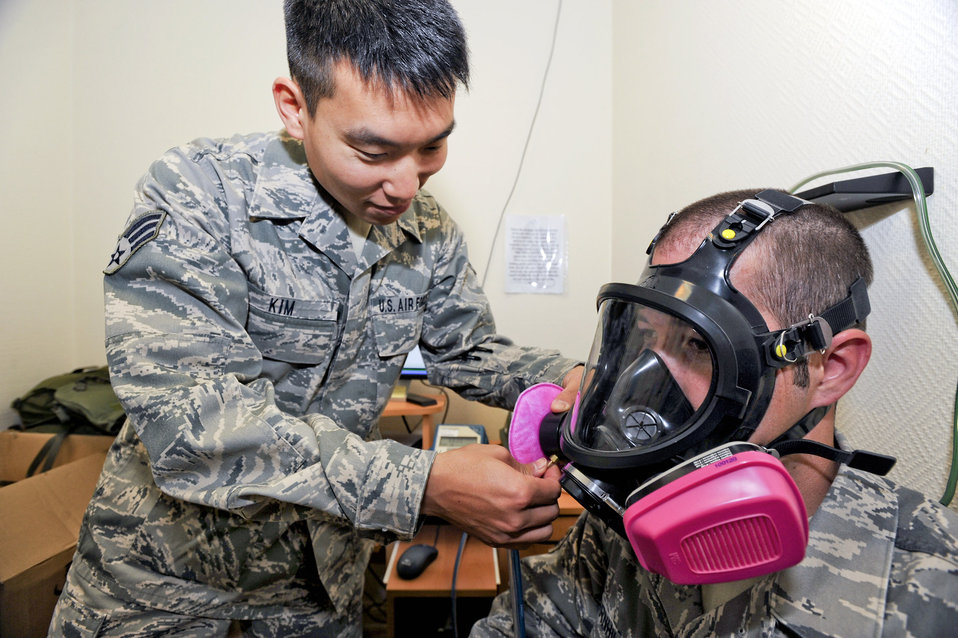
Busy BEEs keep base buzzing

Senior Airman Andrew Kim tightens Senior Airman Jonathan Barnhill's respirator mask before a fit test April 7 at an air base in Southwest Asia. Respirators must be periodically tested to ensure they provide adequate protection. Airman Kim is a bioenvironmental engineering technician with the 379th Medical Group and Airman Barnhill is assigned to the 379th Expeditionary Maintenance Squadron.